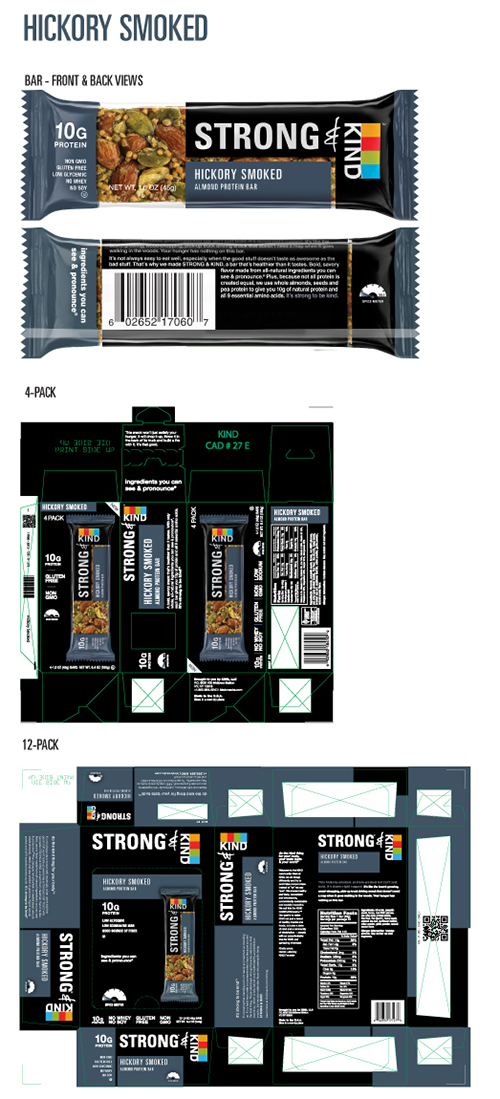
RECALLED – Bars

May 21, 2014 – Product Recall – Kind Healthy Snacks Issues Allergy Alert Due to Potential Presence of Peanut Protein in Strong & Kind Bars and Kind Healthy Grains Maple Pumpkin Seeds Bars.